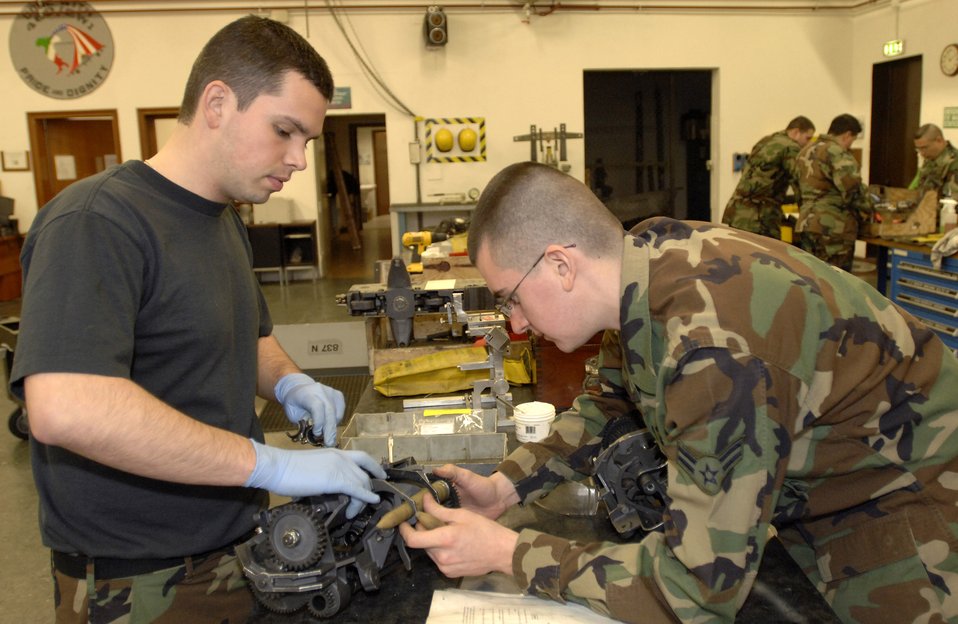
Attention to detail

Staff Sgt. Angel Rodriguez and Airman 1st Class Ron Wolfe test a drum exit unit of an F-16 Fighting Falcon gun system Feb. 6 at Aviano AB, Italy. Sergeant Rodriguez and Airman Wolfe are aircraft armament system maintainers with the 31st Maintenance Squadron Armament Flight. The flight is responsible for the maintenance of F-16 weapons systems.